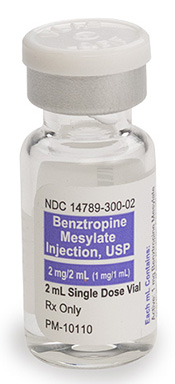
RECALLED – Benztropine Mesylate Injection, USP

August 1, 2013 – Product Recall – Nexus Pharmaceuticals Inc. Issues Voluntary Nationwide Recall of Benztropine Mesylate Injection, USP 2 mg/2 mL (1 mg/mL), in 2 mL Single Dose Vials.